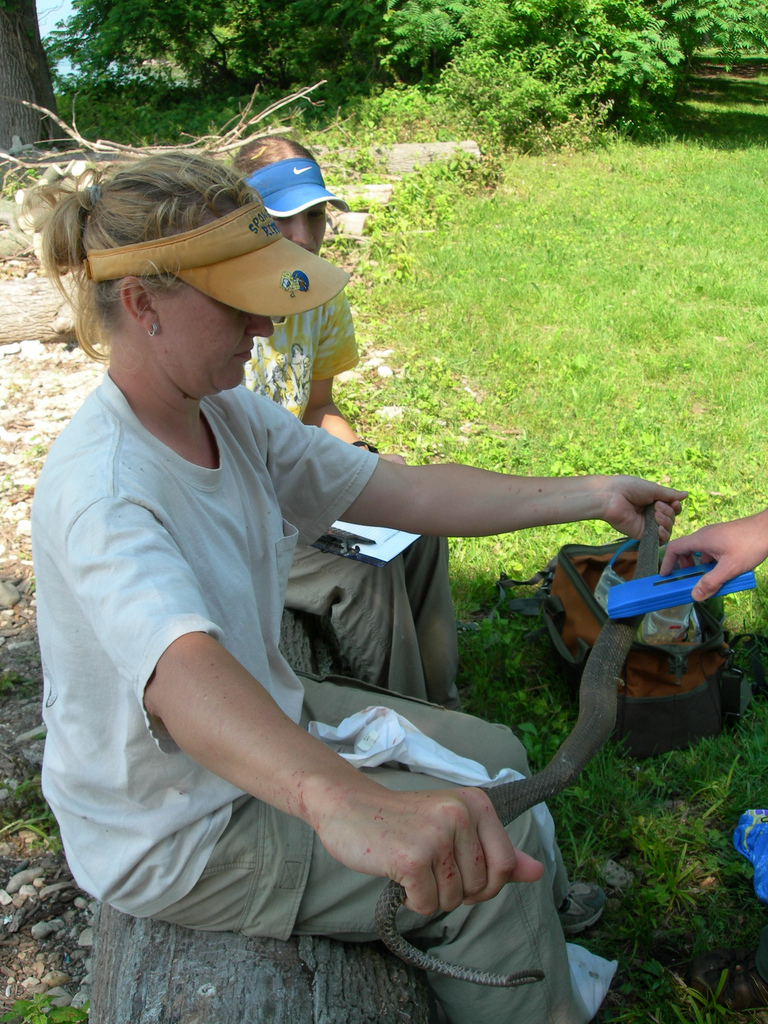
Recovered Lake Erie watersnake (Nerodia sipedon insularum)